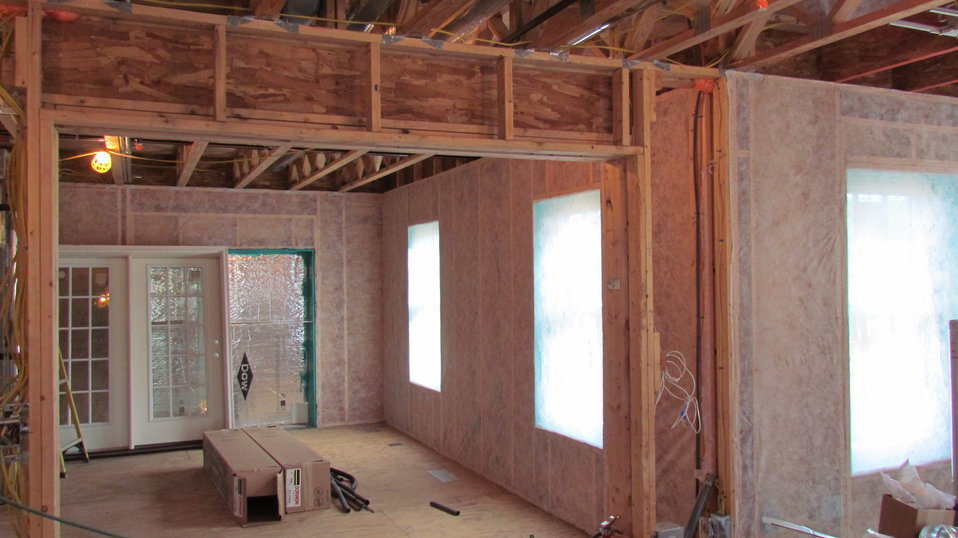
Netting installed on interior wall that will be used to hold blow-in cellulose insulation in place.